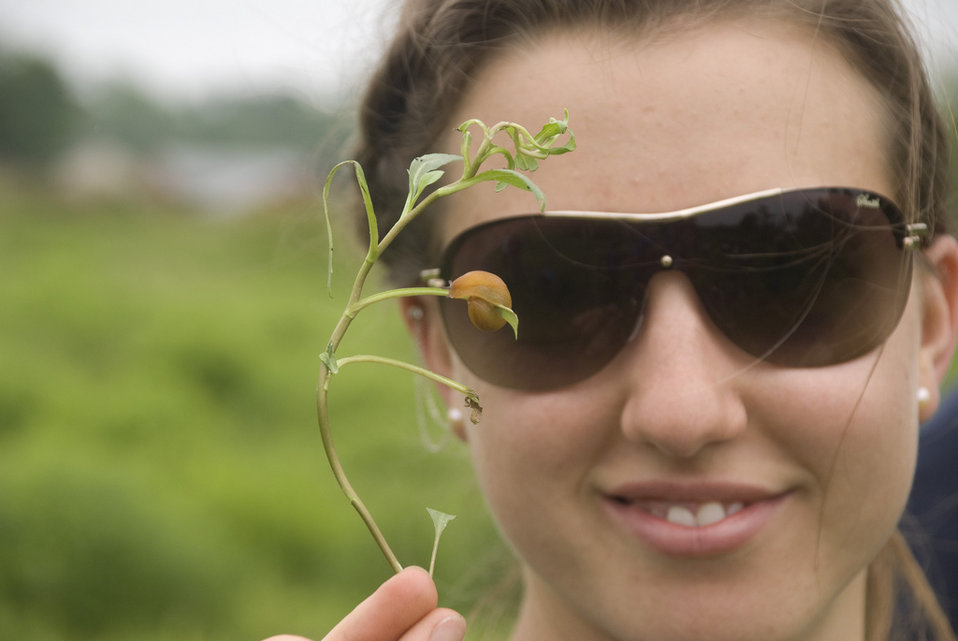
CIP student with slug

U.S. Fish and Wildlife Service